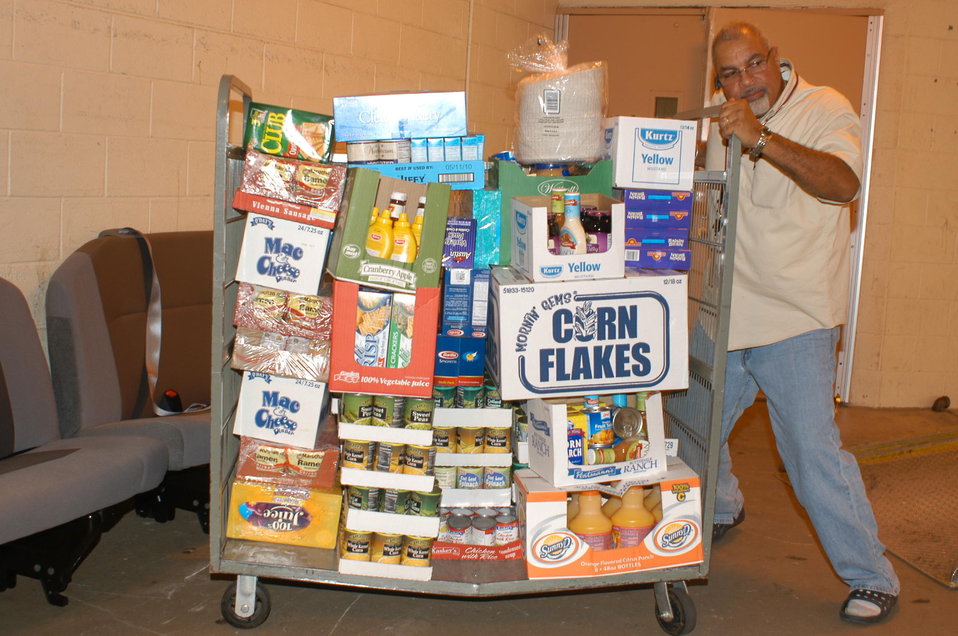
Sierra Exif JPEG